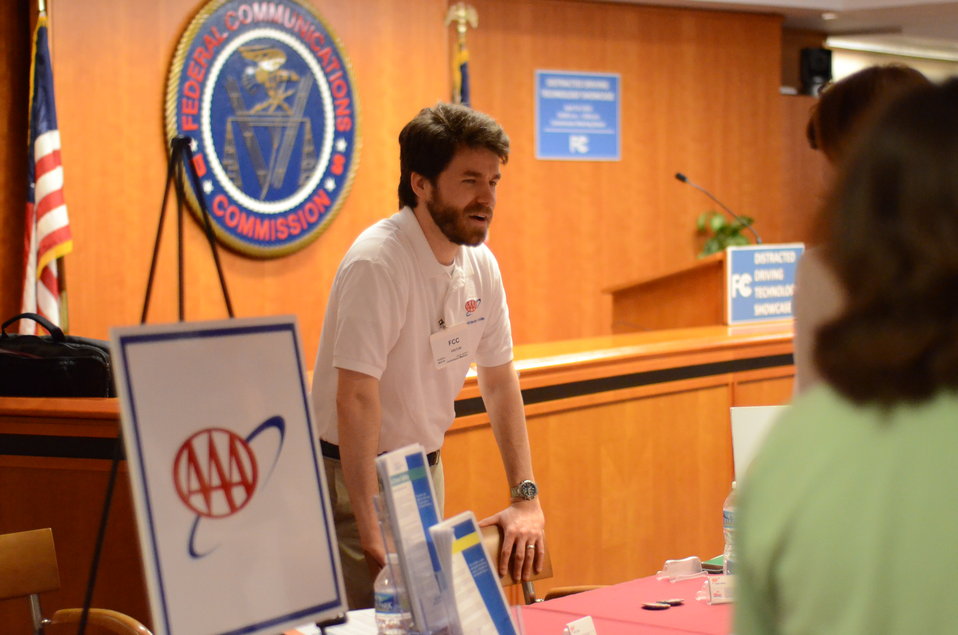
Distracted Driving Technology Showcase April 19, 2013